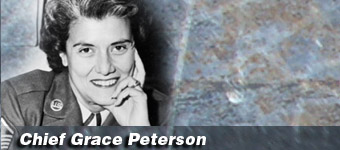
Chief Grace Peterson

Grace Peterson was the first woman to be selected as a chief master sergeant.